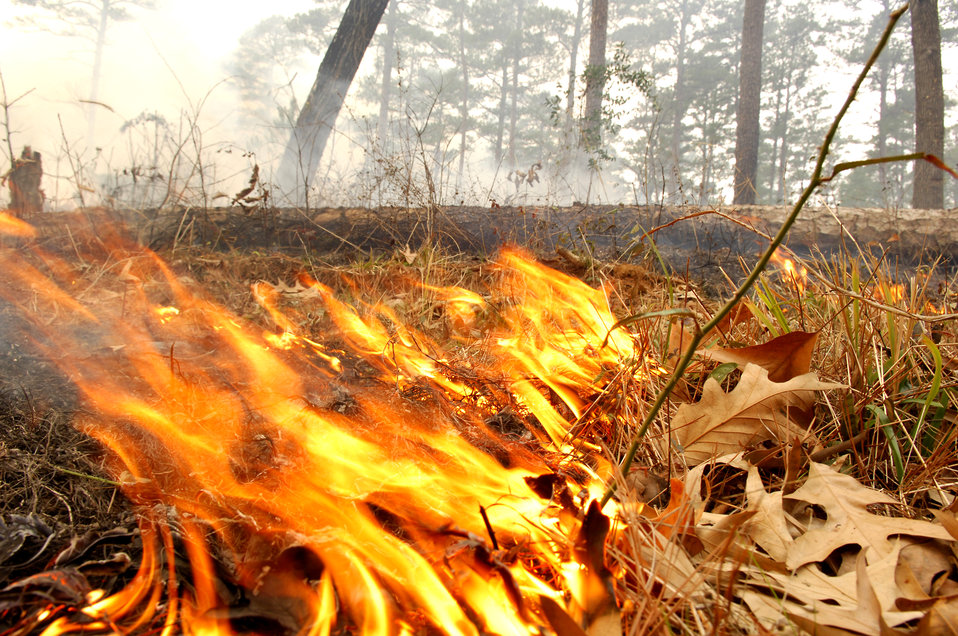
Controlled burn

BARKSDALE AFB, La. (AFPN) -- A small fire consumes low-lying brush and leaves during a controlled burn here. The 200-acre burn Jan. 26 was a timber stand improvement burn, and is one of 10 scheduled controlled burns on Barksdale's East Reservation this year. The burning is conducted to reduce overall fire fuel on the ground, which in turn helps prevent forest fires.